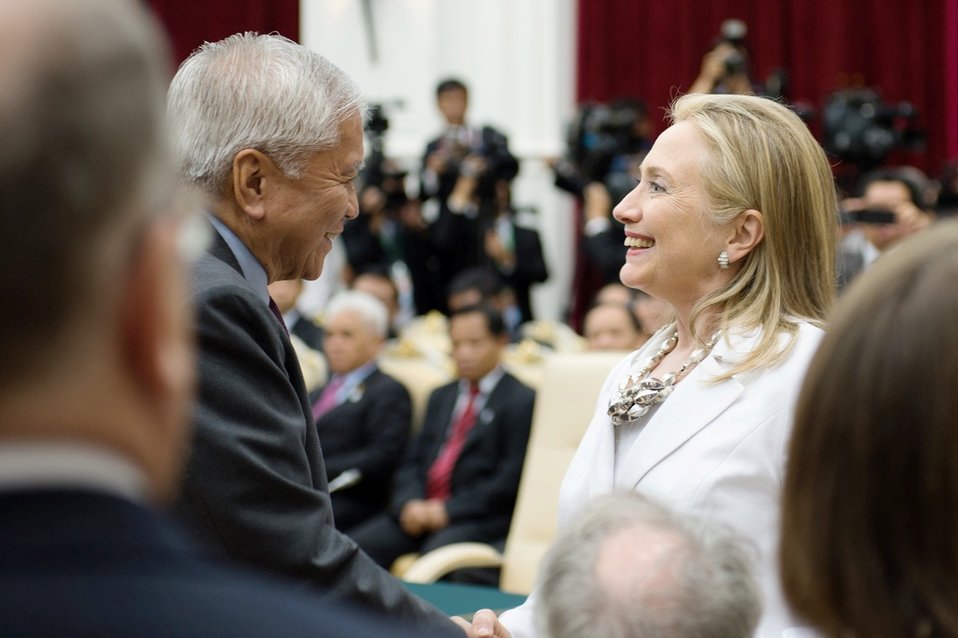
Secretary Clinton Participates in the ASEAN-U.S. Leaders' Meeting

U.S. Secretary of State Hillary Rodham Clinton participates in the ASEAN-United States Leaders' Meeting at the Peace Palace in Phnom Penh, Cambodia, November 19, 2012.